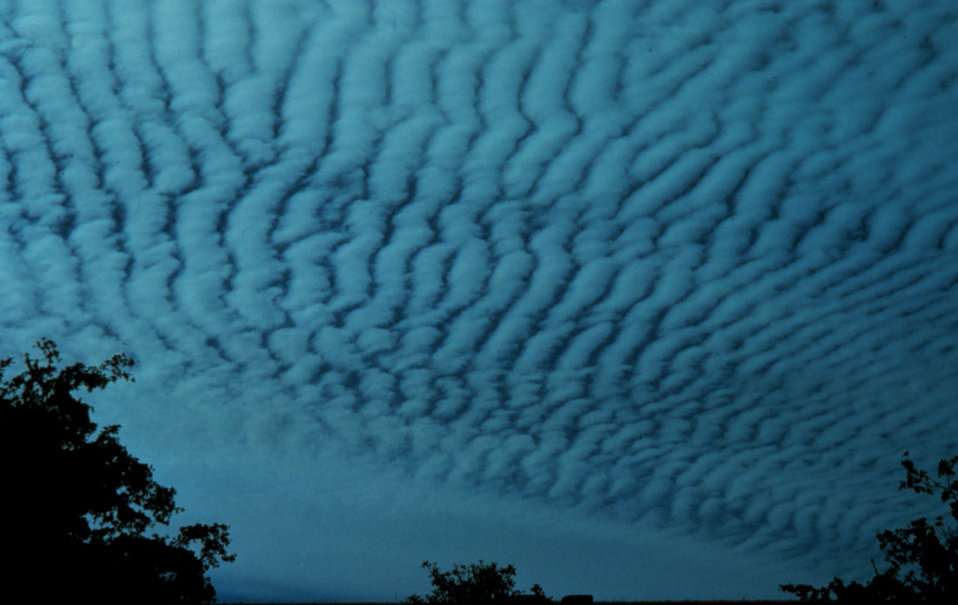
Altocumulus clouds